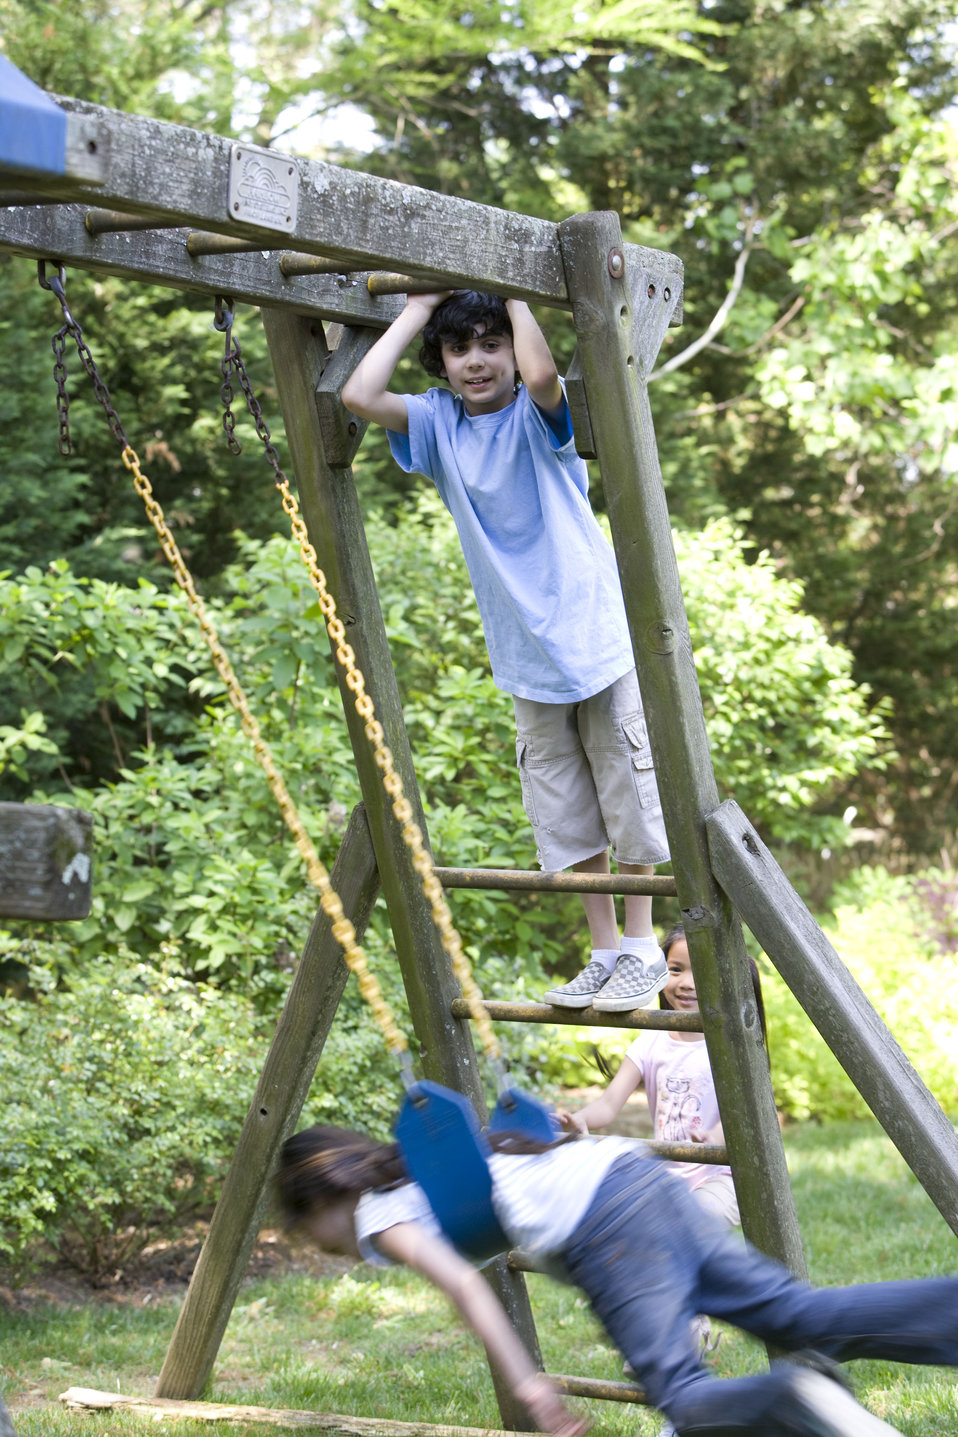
Children love playing outside, and these children were thoroughly enjoying their wooden swing set, and all were having fun in the fresh outdoor air, and the beautiful weather. It's important to note that older wooden playsets may have been treated with arsenic and/or creosote, and therefore, parents need to know if these chemicals were used in their manufacture.